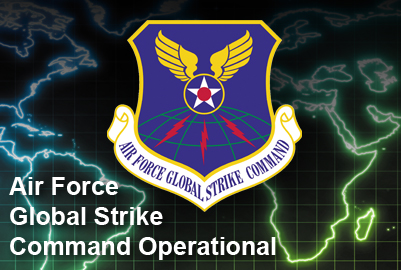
Air Force Global Strike Command activated

Air Force Global Strike Command, stood up Aug. 7 at Barksdale Air Force Base, La., will provide combat ready forces to conduct strategic nuclear deterrence and global strike operations in support of combatant commanders.